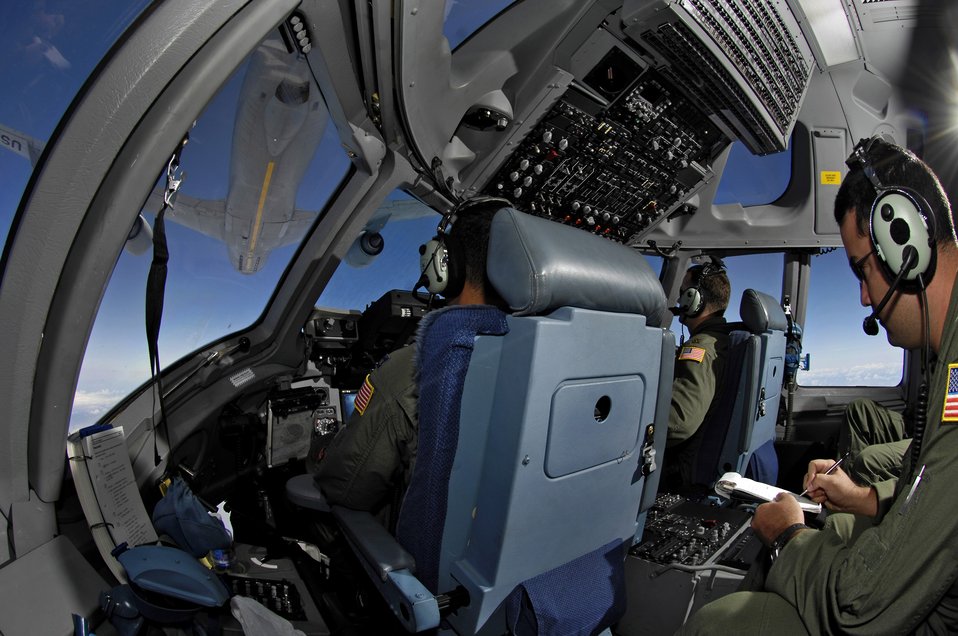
Hickam crew prepares for AMC Rodeo

C-17 Globemaster III aircrew members practice aerial refueling as their aircraft receives fuel from a KC-135 Stratotanker June 22 during a refueling training mission over the Pacific Ocean. The C-17 from the 535th Airlift Squadron at Hickam Air Force Base, Hawaii, and the KC-135 from the 909th Air Refueling Squadron at Kadena Air Base, Japan, are practicing for the upcoming 2007 Air Mobility Command Rodeo.